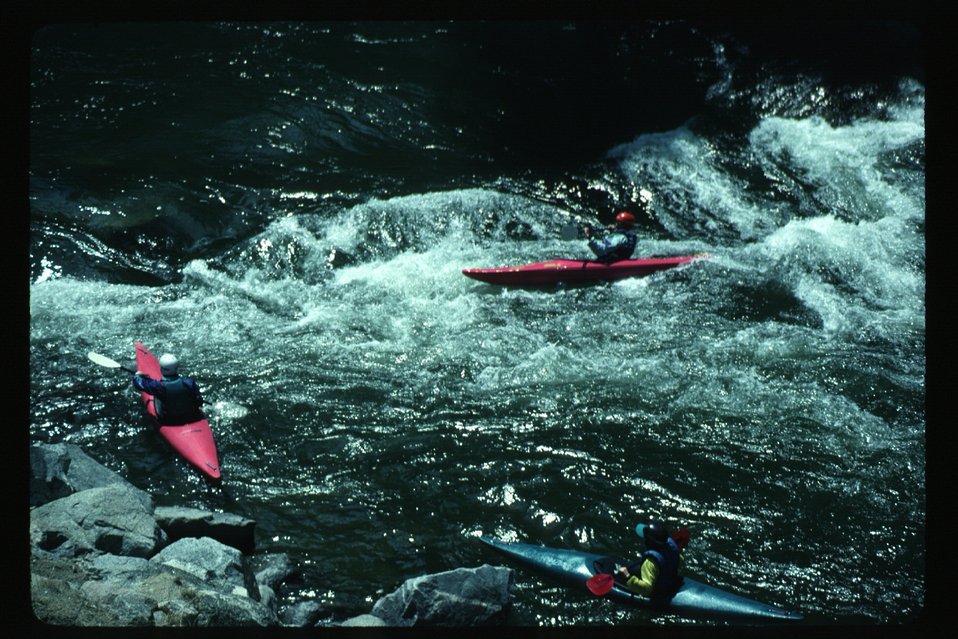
Kayaker in white water Kayaking Four Rivers Field Office LSRD Lower Snake River District